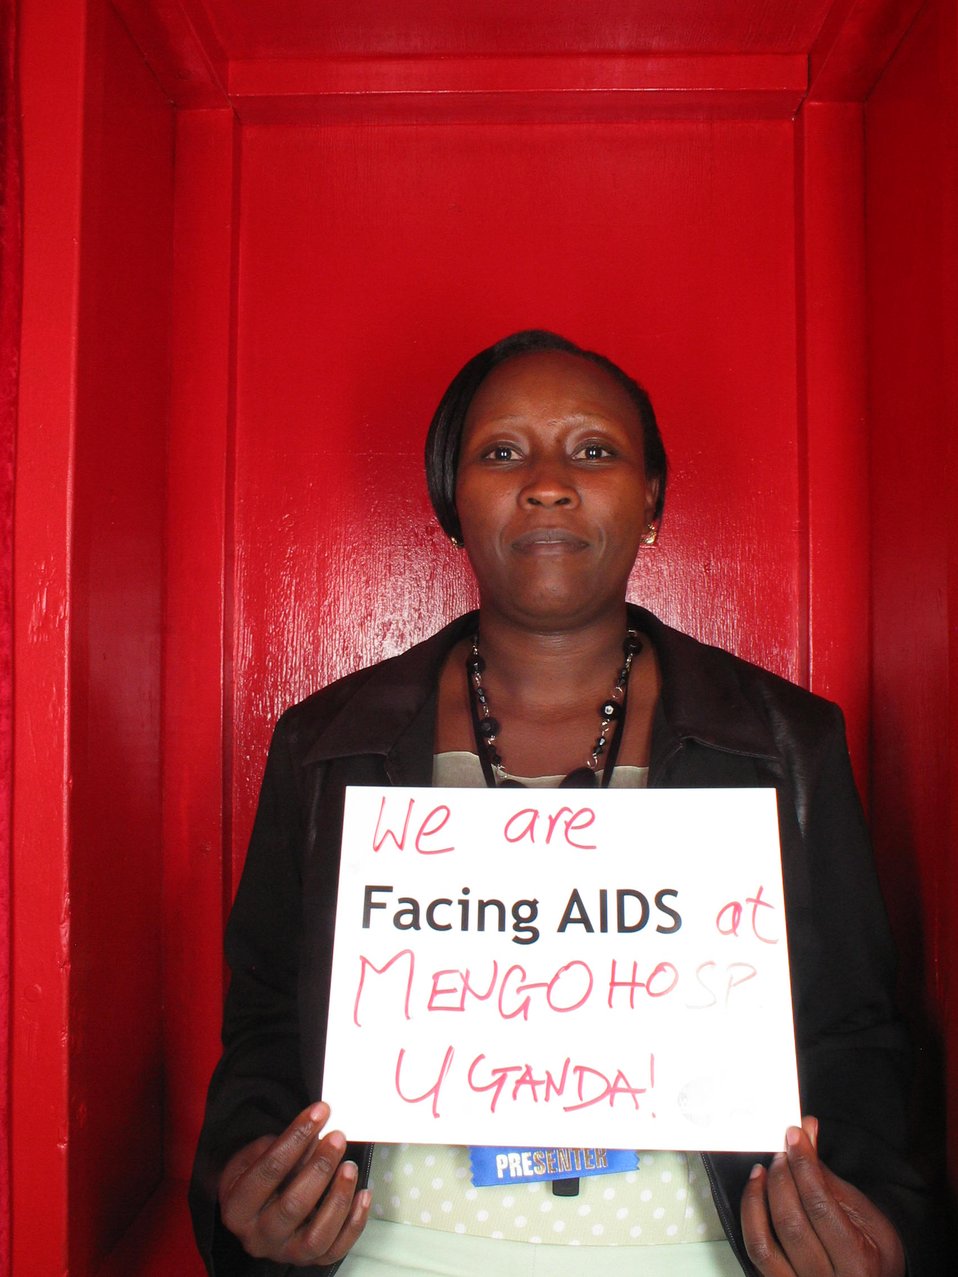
We are Facing AIDS at Mengohosp Uganda.